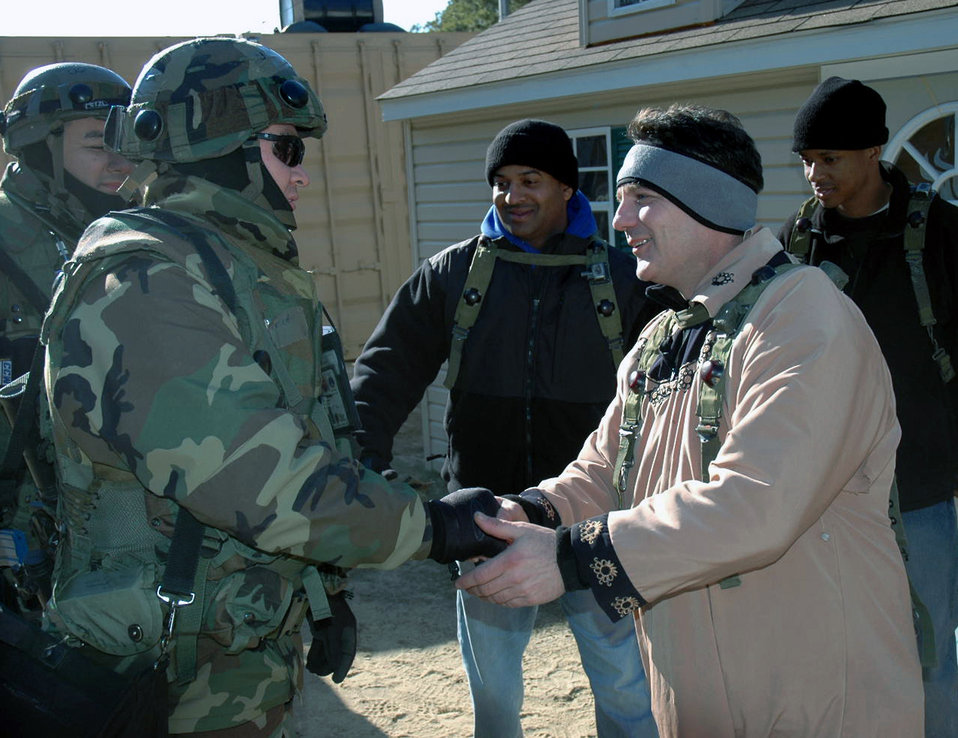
Eagle Flag role players: Airmen helping Airmen

Airmen deployed as part of Air Force Exercise Eagle Flag 07-3 shake hands during a planned scenario in